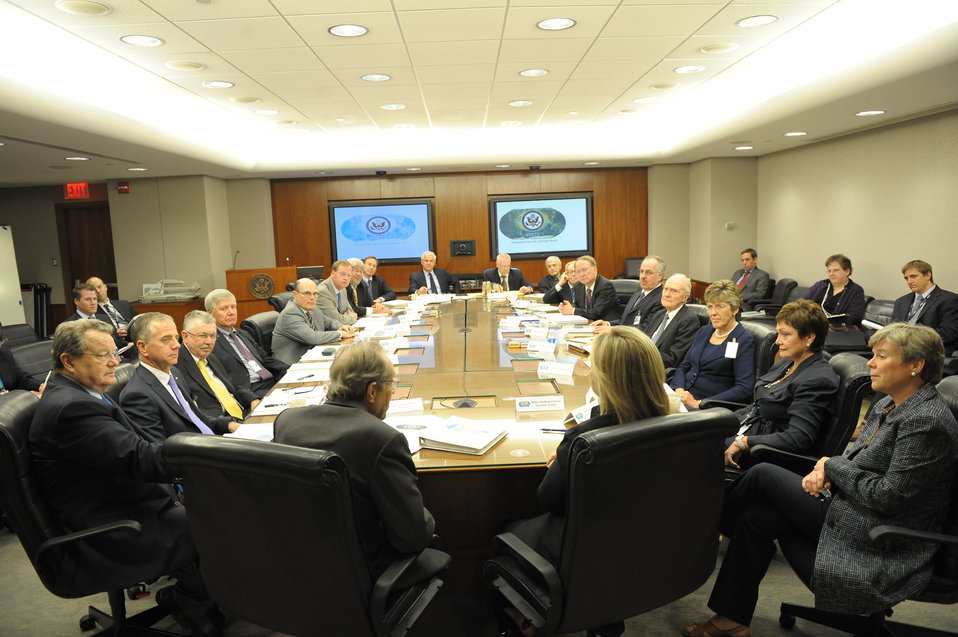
Members of the ISAB Meet

Members of the International Security Advisory Board (ISAB), chaired by Secretary of State Hillary Rodham Clinton and former Secretary of Defense William Perry, meet at the U.S. Department of State in Washington, D.C., on May 24, 2012.